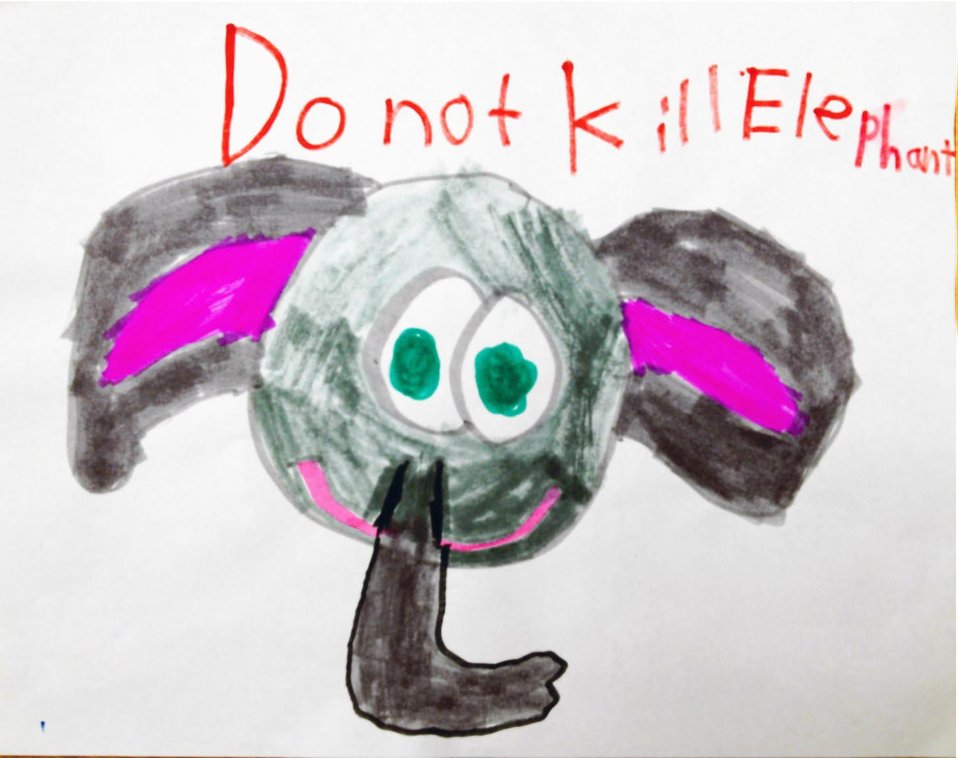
Drawing by Bradley